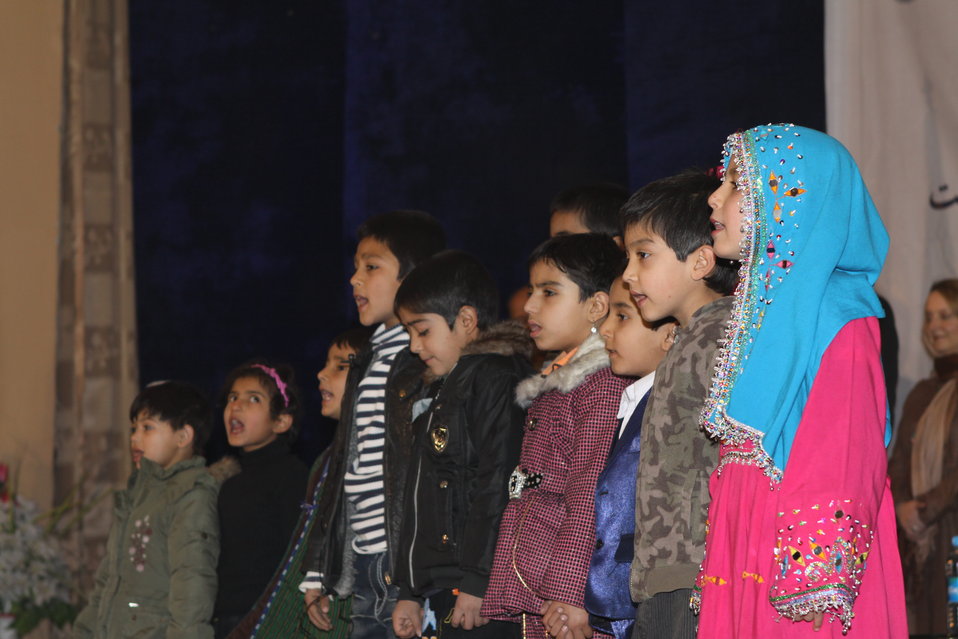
Community Health Workers Celebrated

Kabul, Afghanistan | December 5, 2010 — In support of the United Nations designated International Volunteer Day for Economic and Social Development, Afghanistan’s Ministry of Public Health celebrated its annual Community Health Worker Day today. Acting Minister of Public Health Dr. Suraya Dalil, USAID Senior Deputy Mission Director Robert Hellyer, other government officials, and international donors joined in recognizing the critical contribution of community health workers in Afghanistan and encouraging them to continue their voluntary support to their communities.
The event praised the contributions of the more than 22,000 volunteers throughout the country who deliver community level health-education, counseling, and services out of village health posts located in private homes. The Ministry of Public Health envisioned that community-based healthcare programs will actively encourage communities and families to adopt healthy lifestyles and behaviors, and provide families access to high quality and socially acceptable preventative medicine and life-saving services.
“We have 22,000 community health workers in Afghanistan that are able to implement the basic and standard medicines. They all have been trained through a job description,” said Minister Dalil. Addressing the health workers, she added, “I am proud and feel powerful that I have people like you.”
USAID-funded health projects collaborate closely with the Ministry of Public Health to improve the health and nutritional status of Afghans, provide quality primary healthcare, and promote healthy behaviors at the community and household-levels. USAID supported the training of more than 9,000 of the volunteer community health workers currently working in Afghanistan.
“On behalf of the American people, I congratulate the Community Health Workers for their diligence to gain the skills and knowledge necessary to serve their communities in this important role,” said USAID Senior Deputy Mission Director Hellyer. “USAID strongly supports community based health care and believes that quality community-based health services are essential to reaching Afghanistan’s Millennium Development Goals.”
To support the Basic Package of Health Services, USAID assisted in developing the community health worker training manual, helped train community health worker supervisors and master-trainers, facilitated in-service training, and produced and developed reporting tools, job aids, and education materials.